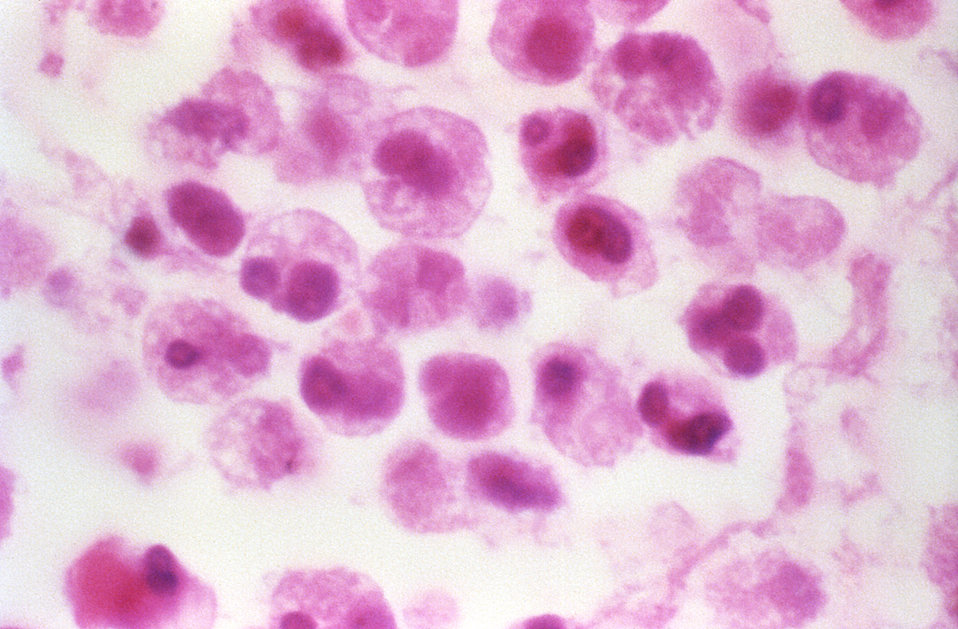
This hematoxylin-eosin (H&E) stained micrograph of lung tissue biopsied from a patient with Legionnaires' diseases, revealed the presence of an intra-alveolar exudate consisting of macrophages, and polymorphonuclear (PMN) leukocytes. The Legionella pneumophila bacteria are not stained in this preparation; Mag. 500x.